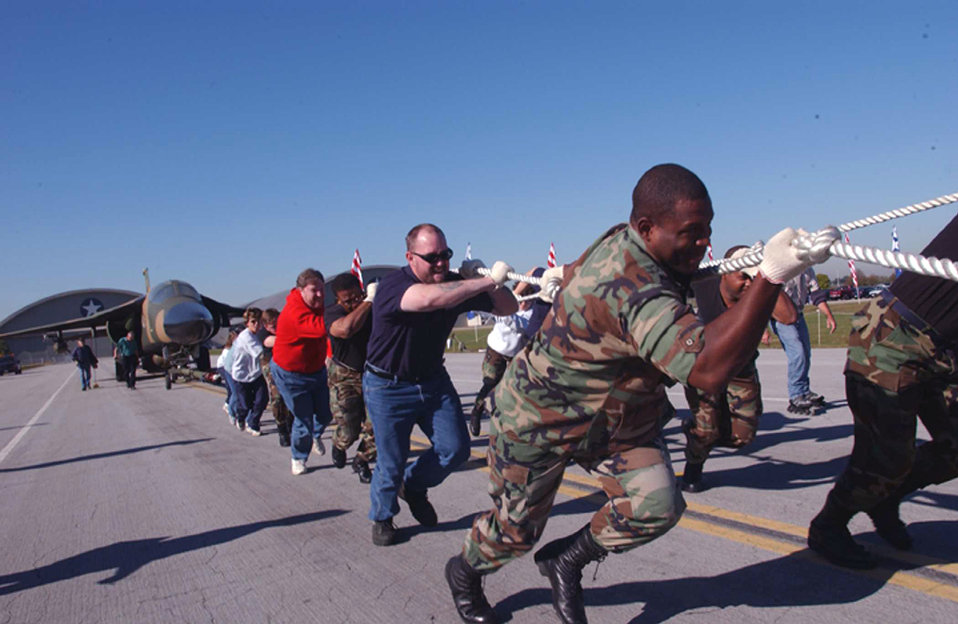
Heave ho

DAYTON, Ohio -- Teams drag a 60,000-pound F-111F fighter jet during the Air Force Museum's fifth annual aircraft pull recently, to see which team can pull it the farthest in 45 seconds. Twenty-four teams participated, raising nearly $5,000 in Combined Federal Campaign donations.